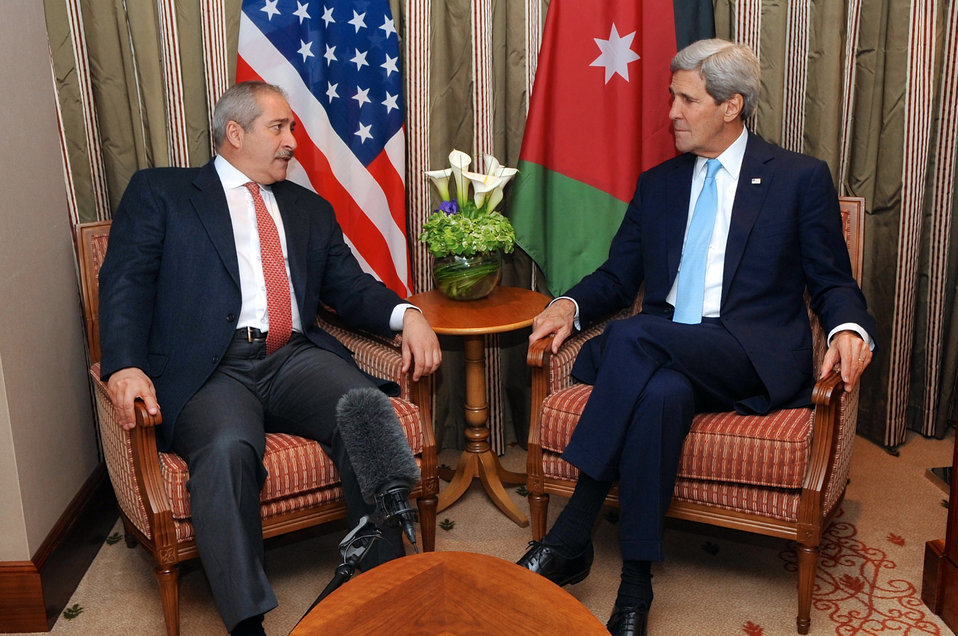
Secretary Kerry Meets With Jordanian Foreign Minister Judeh in London

U.S. Secretary of State John Kerry sits with Jordanian Foreign Minister Nasser Judeh at the outset of a meeting in London, U.K., on May 15, 2014.